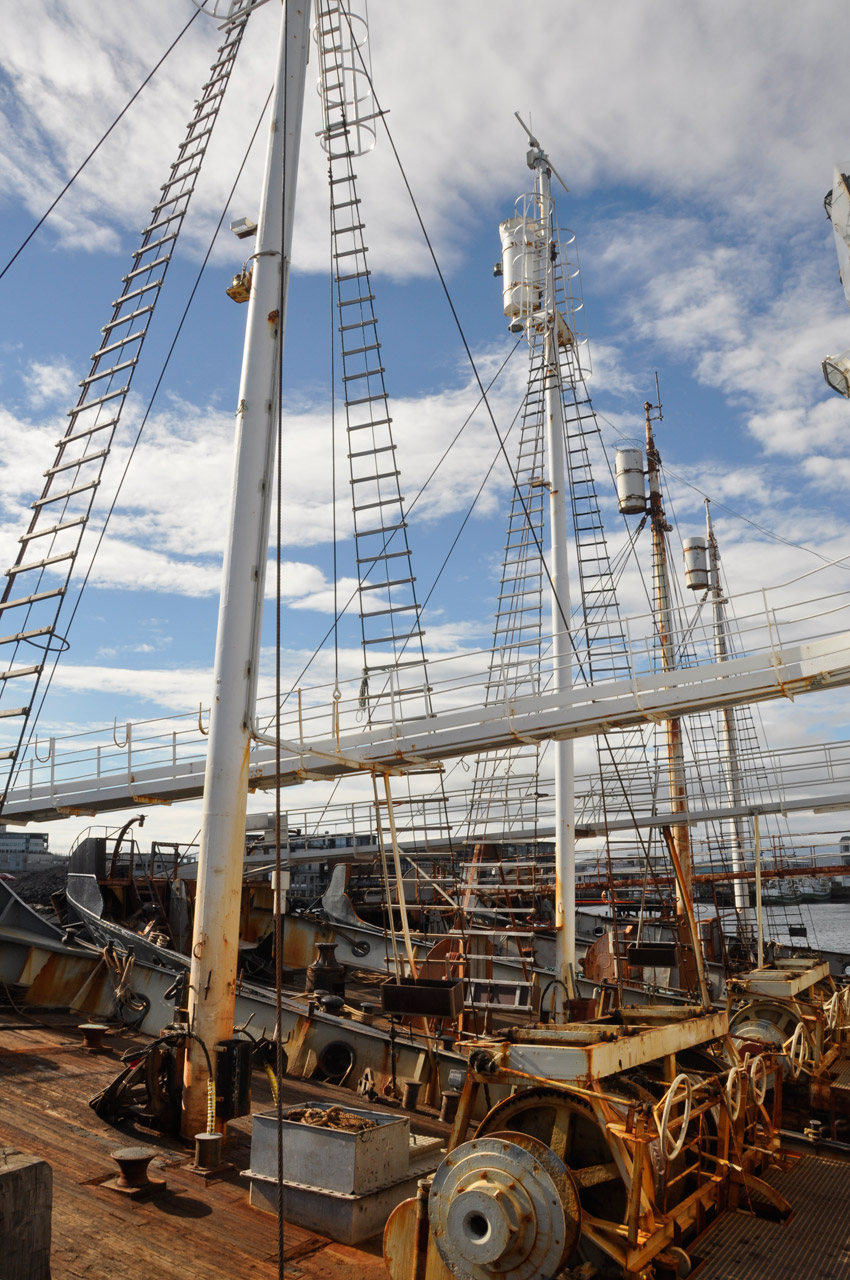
On the roadstead in reykjavik

Ships standing in the roadstead on a sunny day.